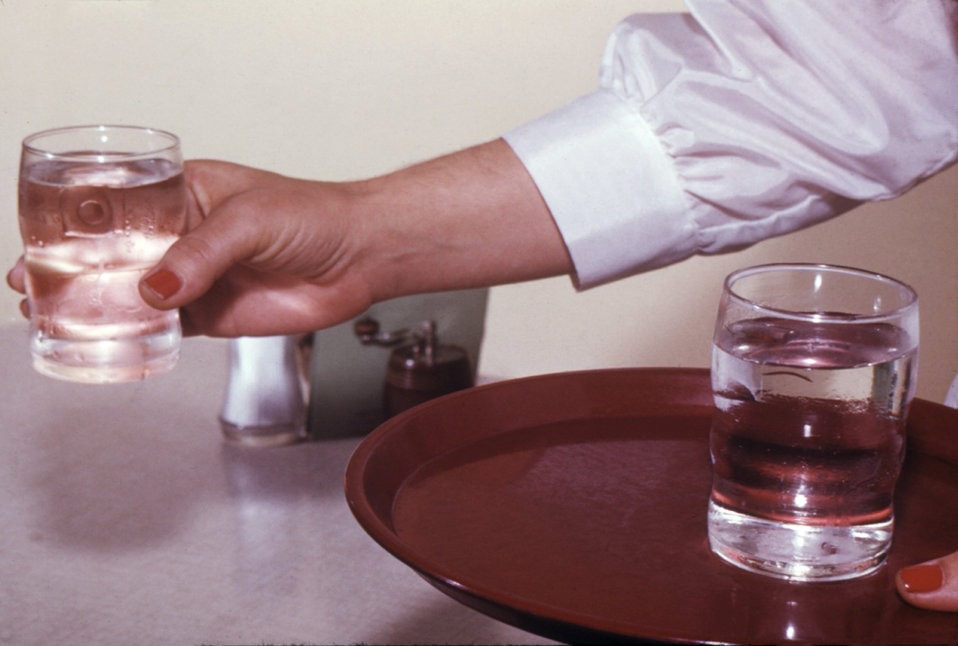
This image depicts how a server properly handles a drinking glass by not touching the rim of the glass to avoid contamination.